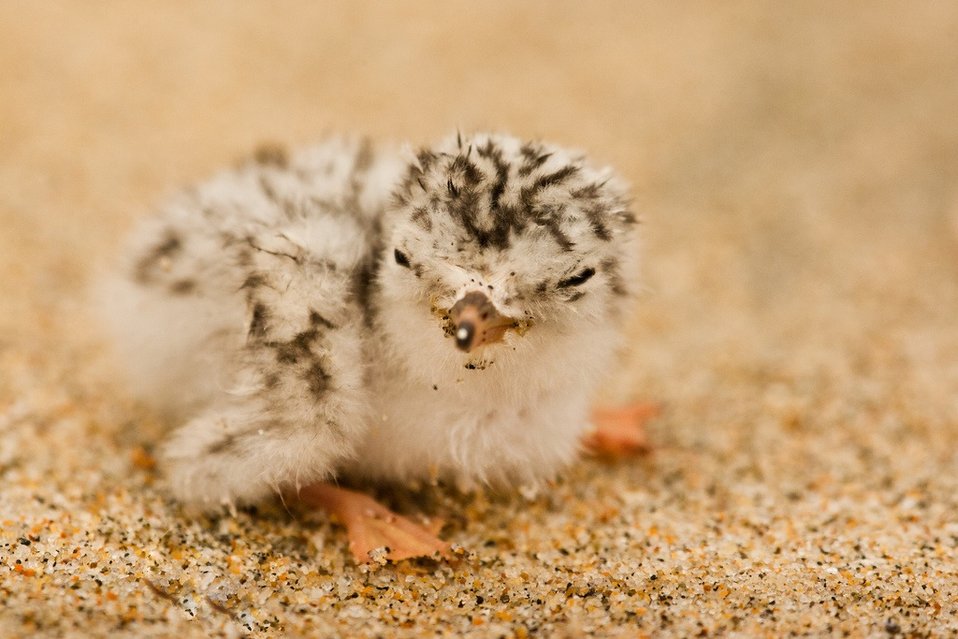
two-day-old chick

California least tern chick
Tijuana Slough National Wildlife Refuge, CA